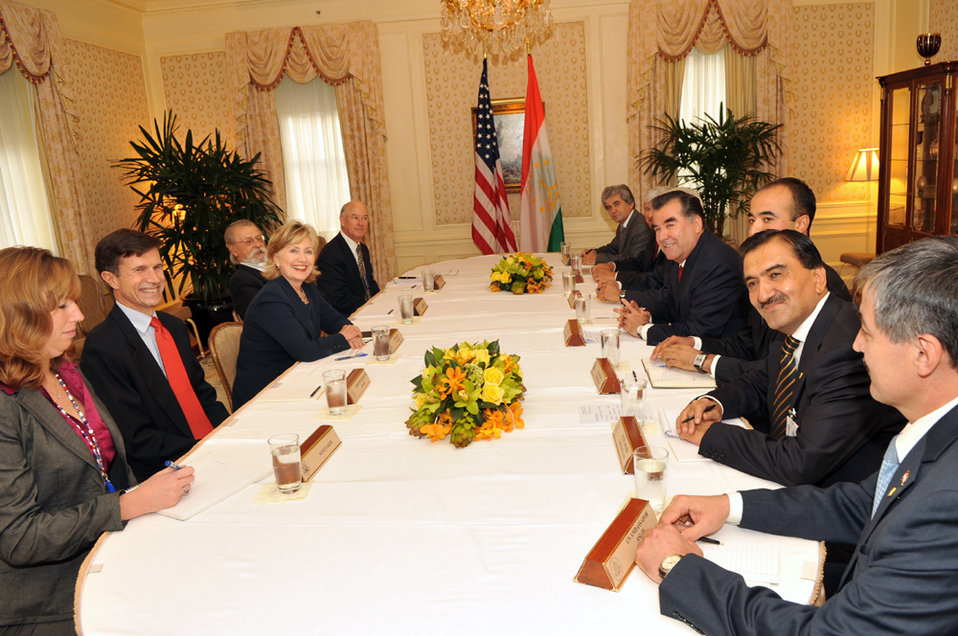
UNGA 2009: Secretary Clinton Meets With Tajikistan President

U.S. Secretary of State Hillary Rodham Clinton meets with Tajikistan President Emomali Rahmon at the Waldorf Astoria hotel during the 64th Session of the UN General Assembly in New York City, New York September 24, 2009.